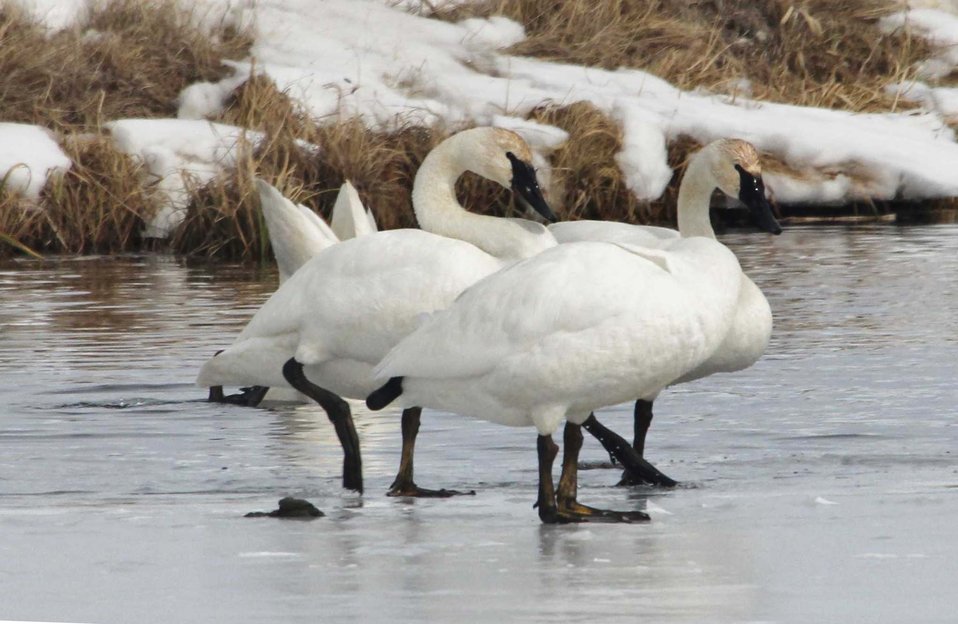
Grace and Beauty

Several trumpeter swans gather on the edge of the ice along the Flat Creek.

Credit: USFWS / Ann Hough, National Elk Refuge volunteer